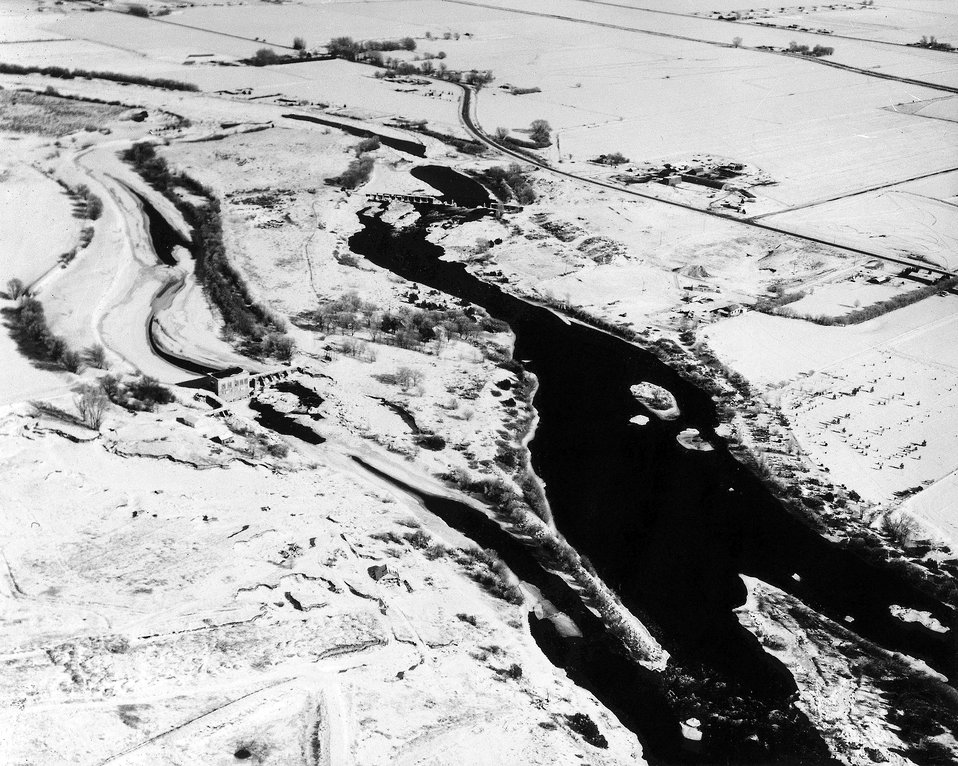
The City of Idaho Falls has initiated a program to renovate and expand the city's power generating system. c. 1978